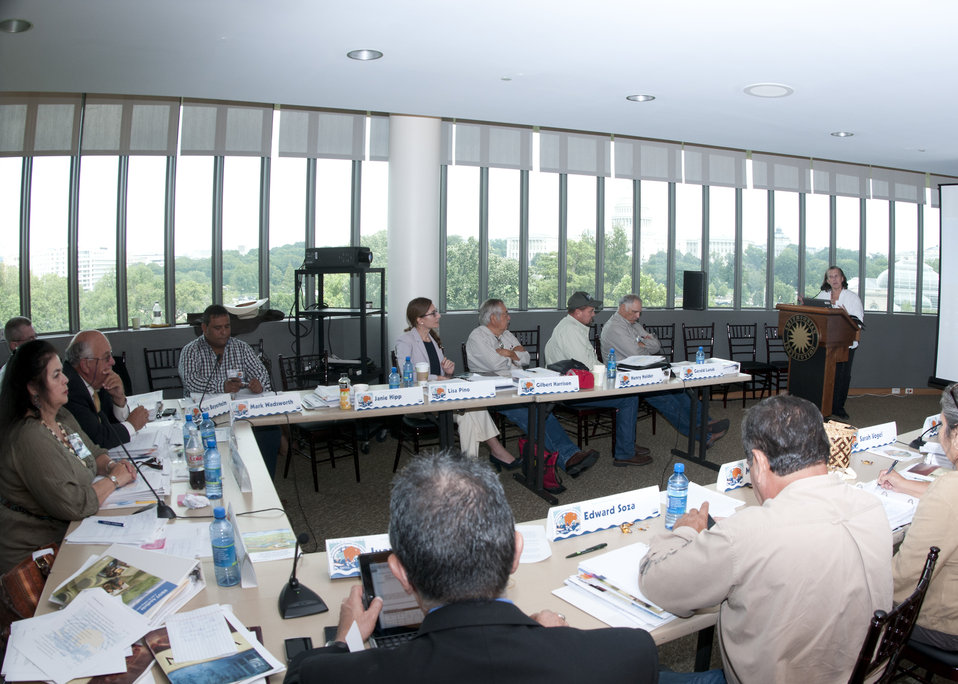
U.S. Department of Agriculture (USDA) Senior Advisor to the Secretary for Tribal Relations Janie Simms Hipp, Chickasaw Nation, speaks at the conclusion of the first business meeting of USDA’s Council for Native American Farming and Ranching (CNAFR) held at the National Museum of the American Indian in Washington, D.C., on Wednesday, Aug. 15, 2012. CNAFR was created to advise the Secretary on ways to eliminate barriers to participation for Native American Farmers and Ranchers in USDA programs. The Council was established as part of the Keepseagle settlement, and is conducted under the oversight of USDA's Office of Tribal Relations under the Office of the Secretary of Agriculture.